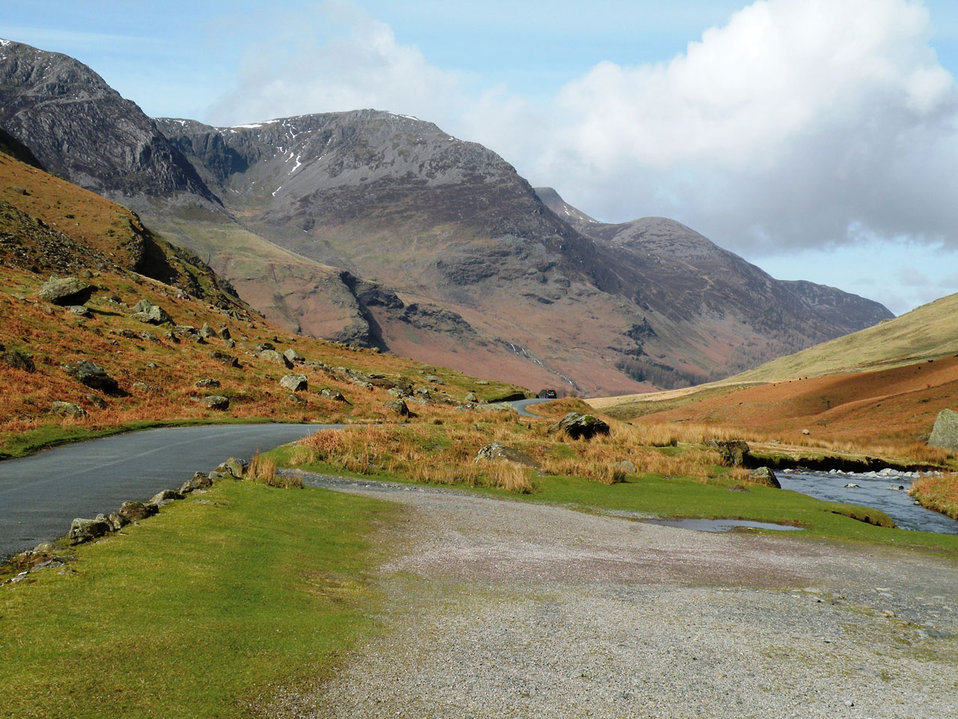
Honister pass in the cumbrian lake district.